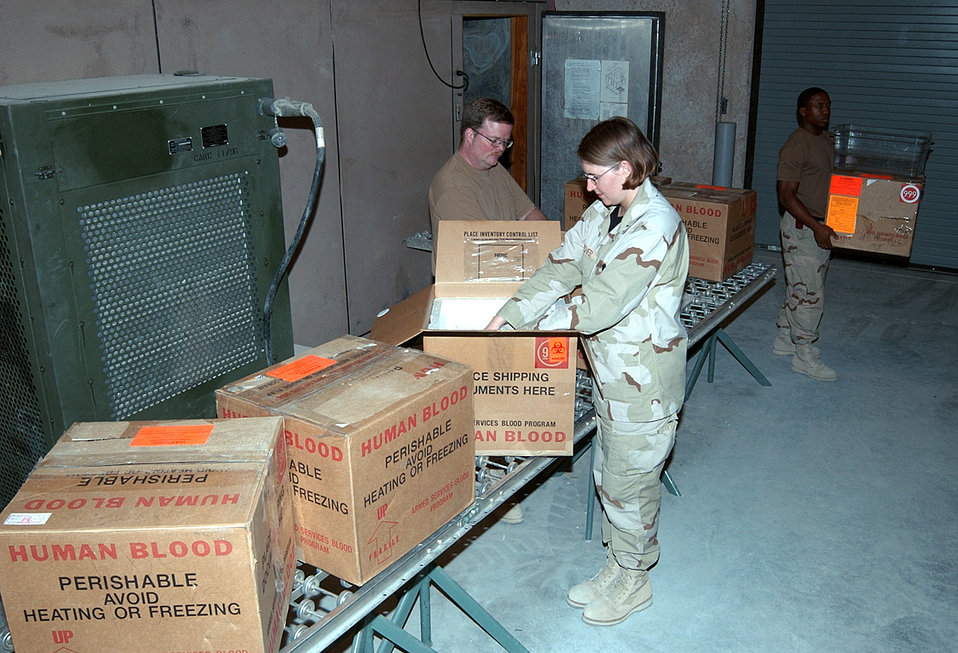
Blood Supply

AL UDEID AIR BASE, Qatar -- (From left) Staff Sgt. Scott Tone, 1st Lt. Sara Hatcher and Airman 1st Class Covito Redman are part of the 379th Expeditionary Medical Group's blood transshipment center team. The team receives blood from the distribution center at McGuire Air Force Base, N.J., and sends it anywhere in the theater of operations. The Airmen are deployed from Davis-Monthan AFB, Ariz.